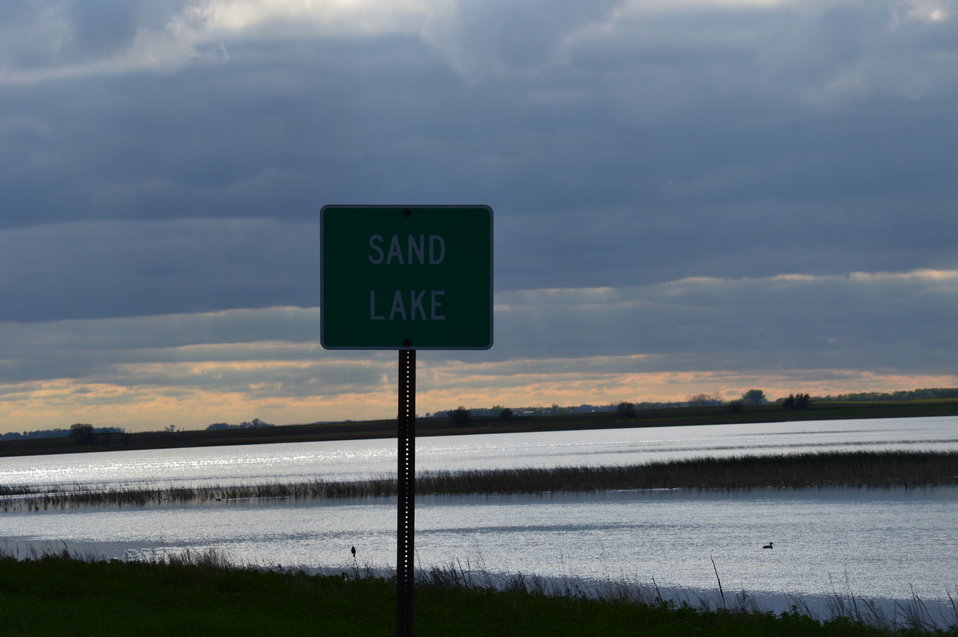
Close-up of Sand Lake sign

Scenery and wildlife at Sand Lake National Wildlife Refuge in South Dakota